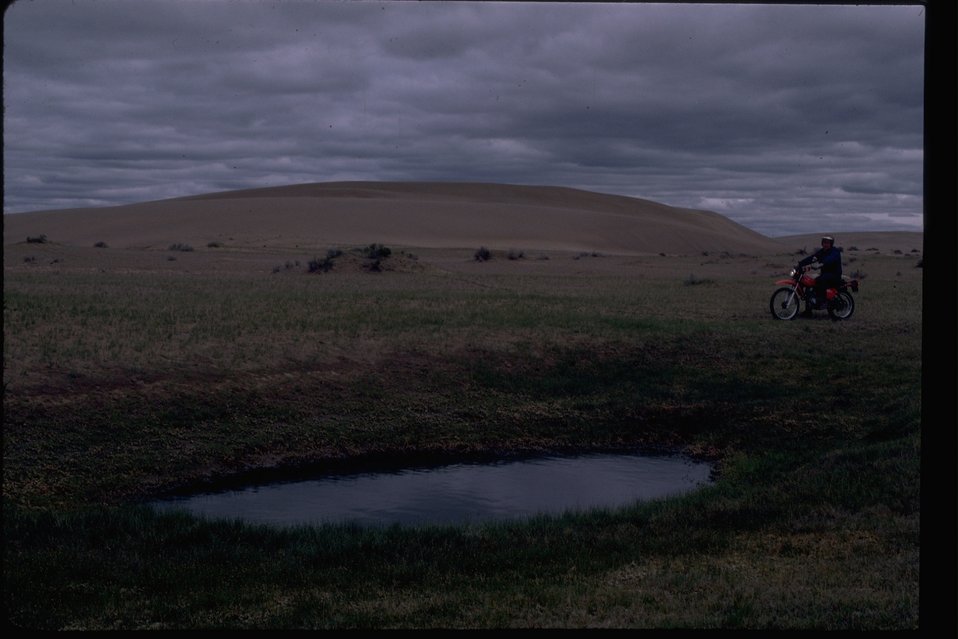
Sand Dunes spring in open part of Sand Dunes Wilderness Study Area. OR 1-24